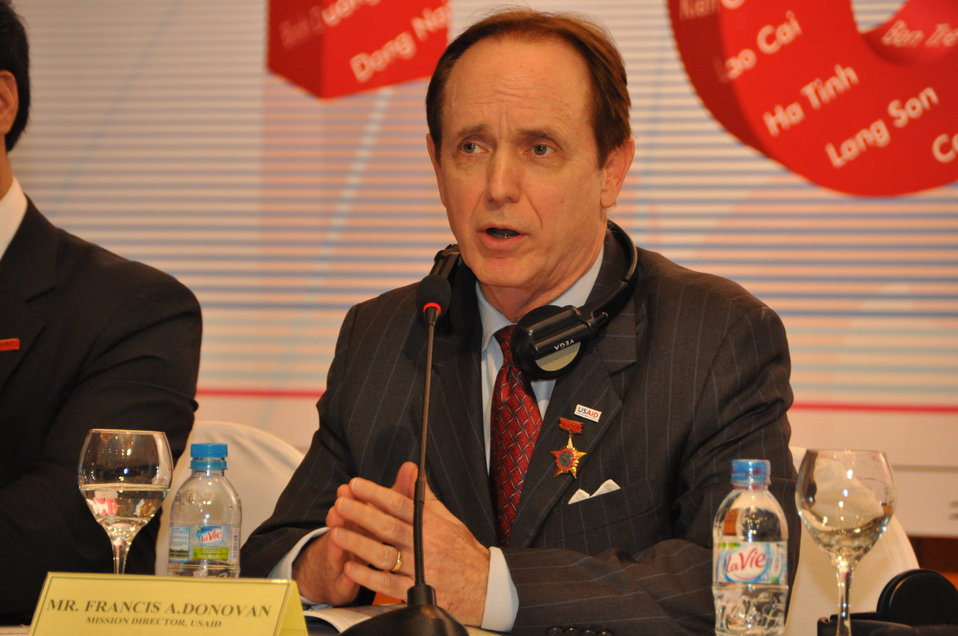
USAID Mission Director Francis Donovan at the Provincial Competitiveness Index 2011 Launch: